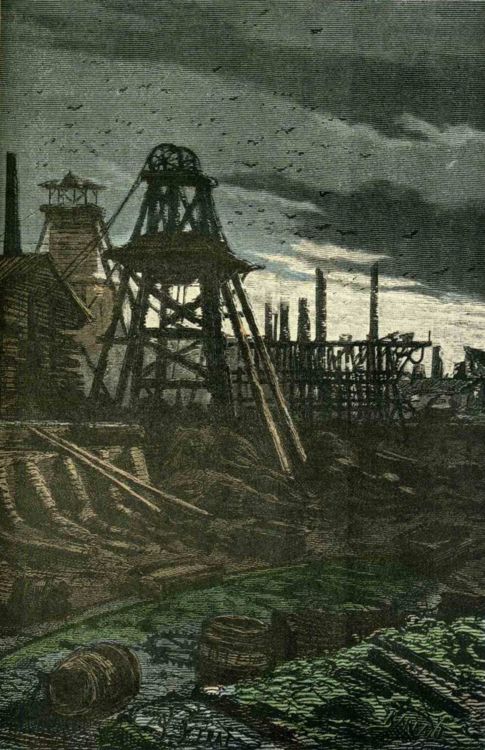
An illustration from the novel 'The Child of the Cavern' (alternative English titles for this novel include: Black Diamonds, Black Indies, Child of the Cavern, or Strange Doings Underground and The Underground City) by Jules Verne drawn by Jules Férat. Polski: Ilustracja powieści Juliusza Verne'a 'Czarne Indie' autorstwa Julesa Férata. Français : 'Les Indes noires', Jules Férat. Orginal description from the book: Français : De tout cela il sortait une vive impression d’abandon.